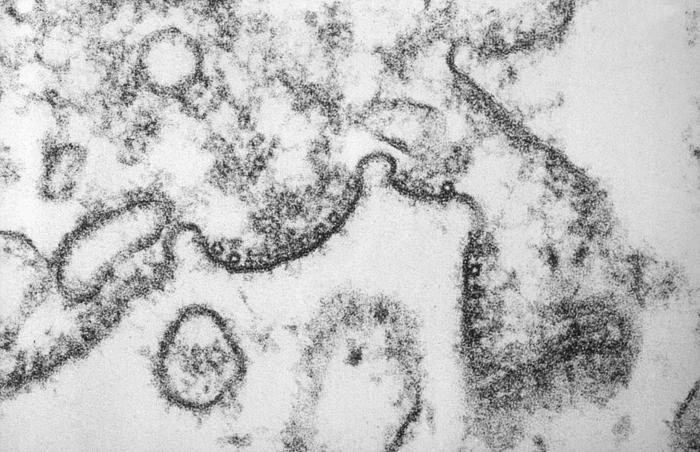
This transmission electron micrograph (TEM) revealed some cytoarchitectural changes in an unknown human-derived tissue sample associated with a Nipah virus infection.